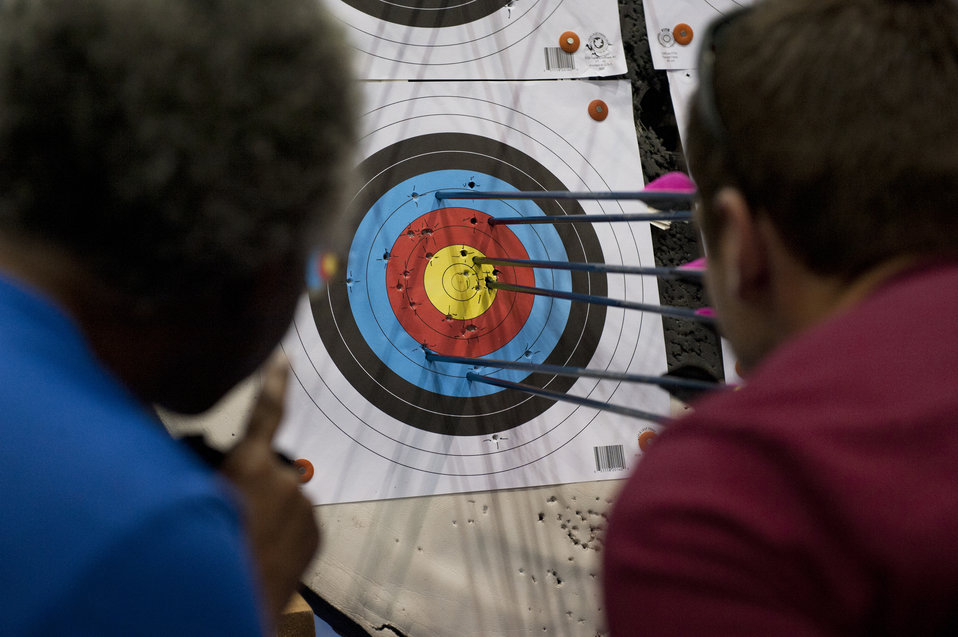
Warrior Games

Gwen Sheppard, left. checks the hits on her target with an offiicial during the archery competition of Warrior Games 2012 at the U.S. Air Force Academy in Colorado Springs, Colo., May 2, 2012. Sheppard is with the Air Force team.